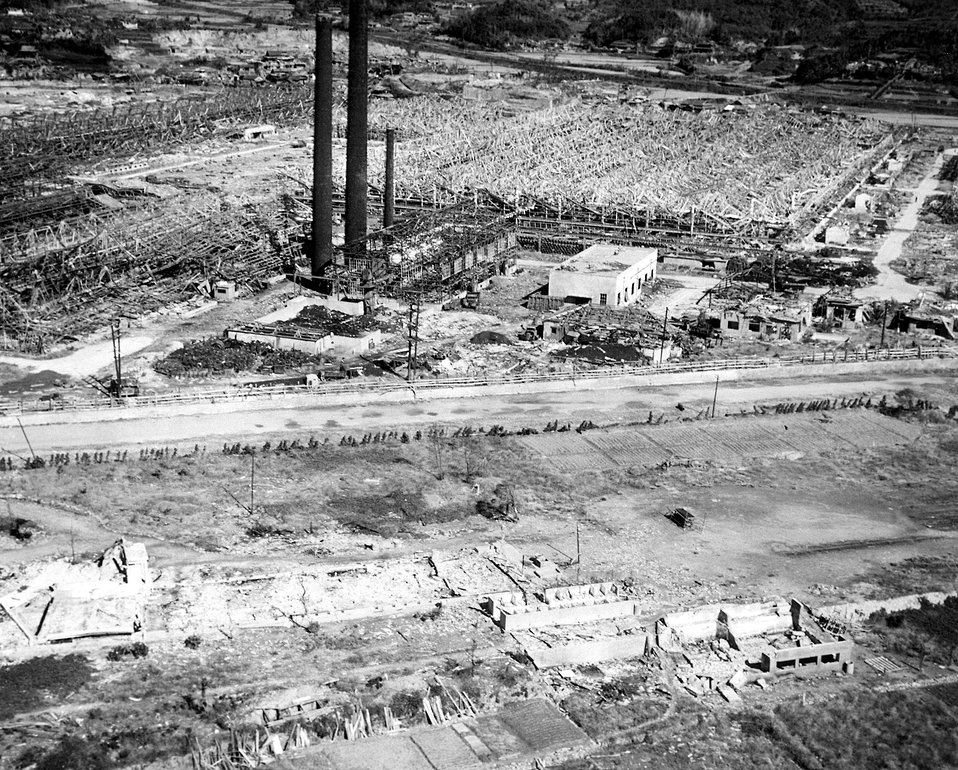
ATOMIC BOMBING OF JAPAN